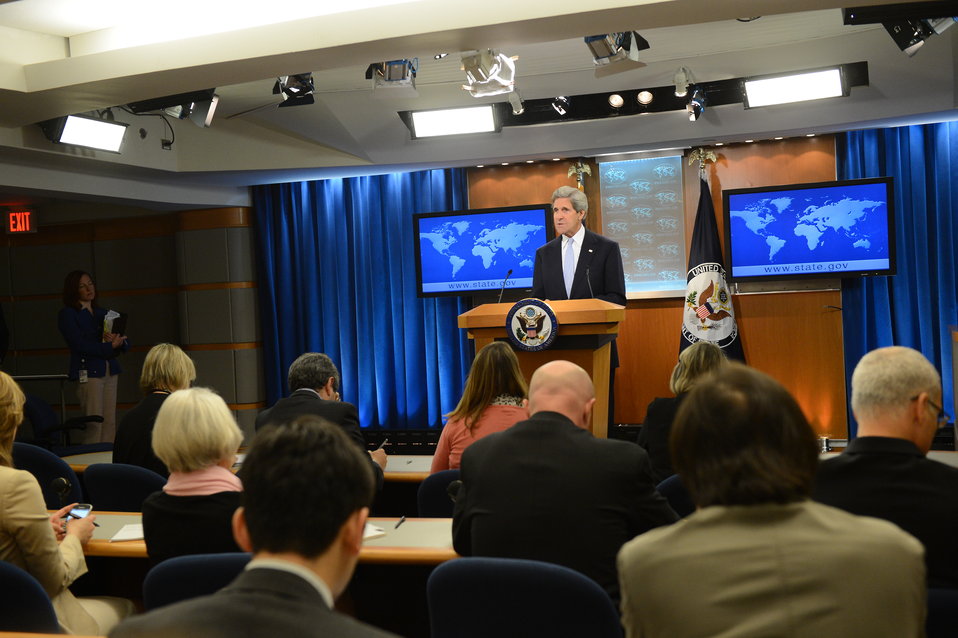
Secretary Kerry Announces the Appointment of Russ Feingold as the Special Envoy for the African Great Lakes region and the Democratic Republic of the Congo

U.S. Secretary of State John Kerry announces the appointment of Russ Feingold as the new U.S. Special Envoy for the African Great Lakes region and the Democratic Republic of the Congo at the U.S. Department of State in Washington, D.C., on June 18, 2013.